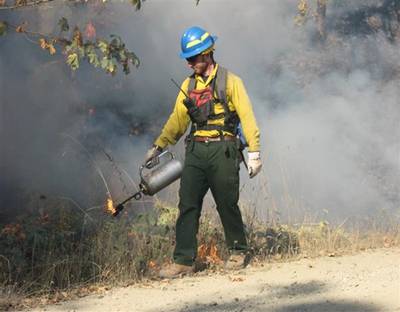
Rx Fired

Prescribed burn.